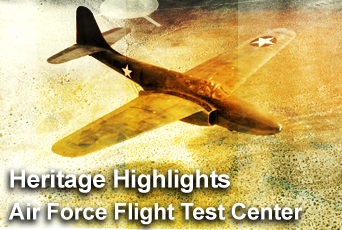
Air Force Flight Test Center Heritage Spotlight

The latest Heritage to Horizons series presentation highlights the Air Force Flight Test Center whose heritage mastered emerging aircraft technologies, and is the de factor center for American flight research.